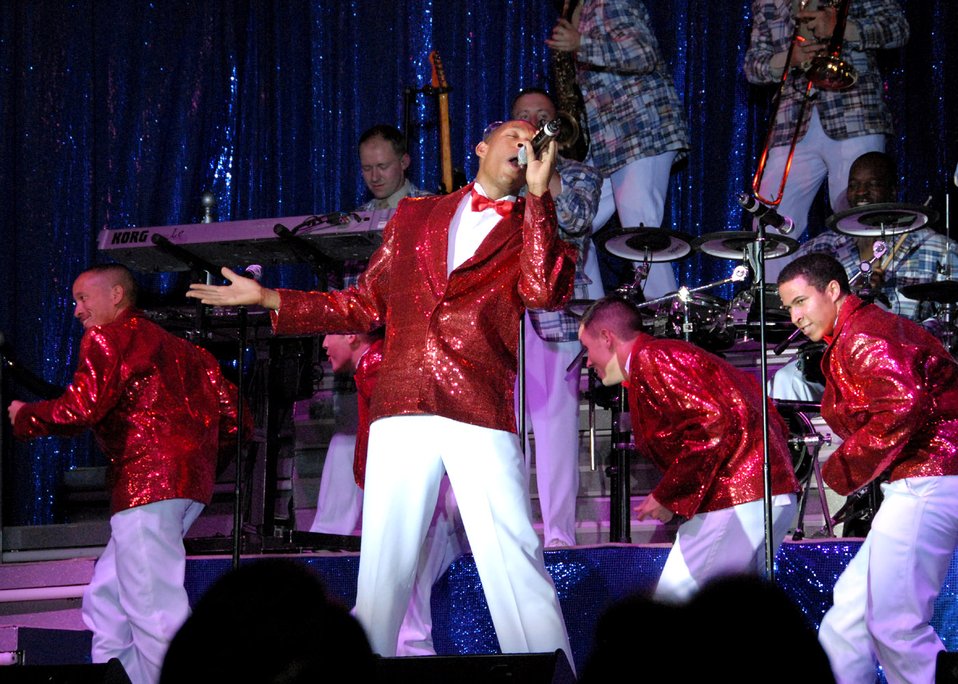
Tops In Blue performs at Osan

Senior Airman Tyrece Robertson and Tops In Blue performers sing and dance for during their annual world tour celebrating